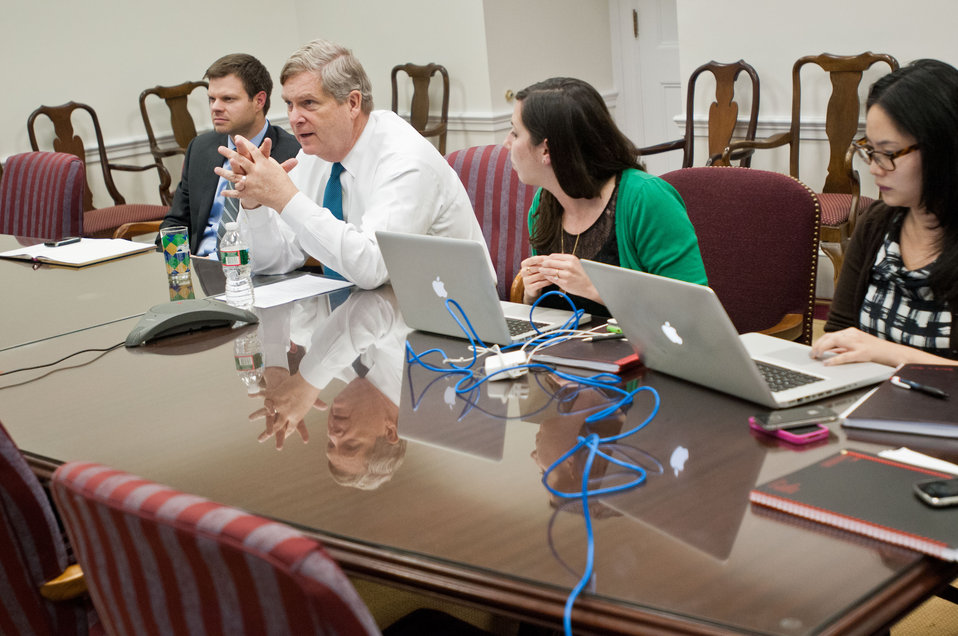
Agriculture Secretary Tom Vilsack (left) composes an answer, that will be posted for him, by New Media Content Specialist Rebecca Frank (center) and Deputy Press Secretary Stephanie Chan (right),and other staff, before hosting a live and online Virtual Office Hours session on Twitter, in Washington, D.C. on, Monday, December, 17, 2012. Agriculture Deputy Administrator Farm Service Agency Brandon Willis, (far left), studies various incoming questions and provides input. Online questions about the important role of rural America to the national and global economy, increasing agricultural opportunities in U.S. communities, and the importance of passing a five-year Farm Bill are addressed during this live Twitter chat. Some of the responses address food and nutrition, agricultural research, urban agriculture, bio-based products and how rural communities can get more involved in rural policy, to name a few. Questions were submitted live and in advance to the @USDA Twitter account using the hashtag #AskUSDA.